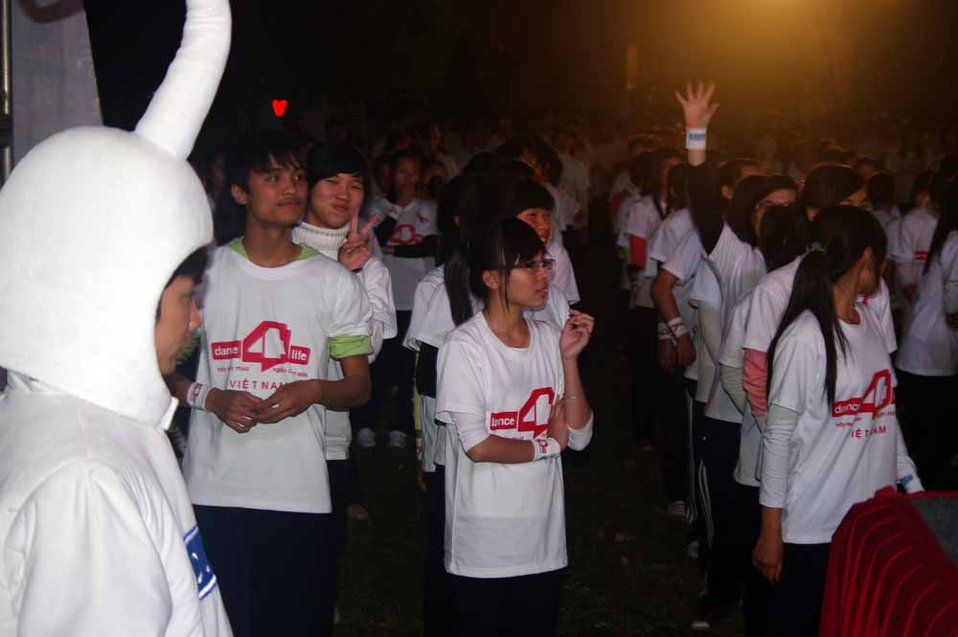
dance4life, Hanoi